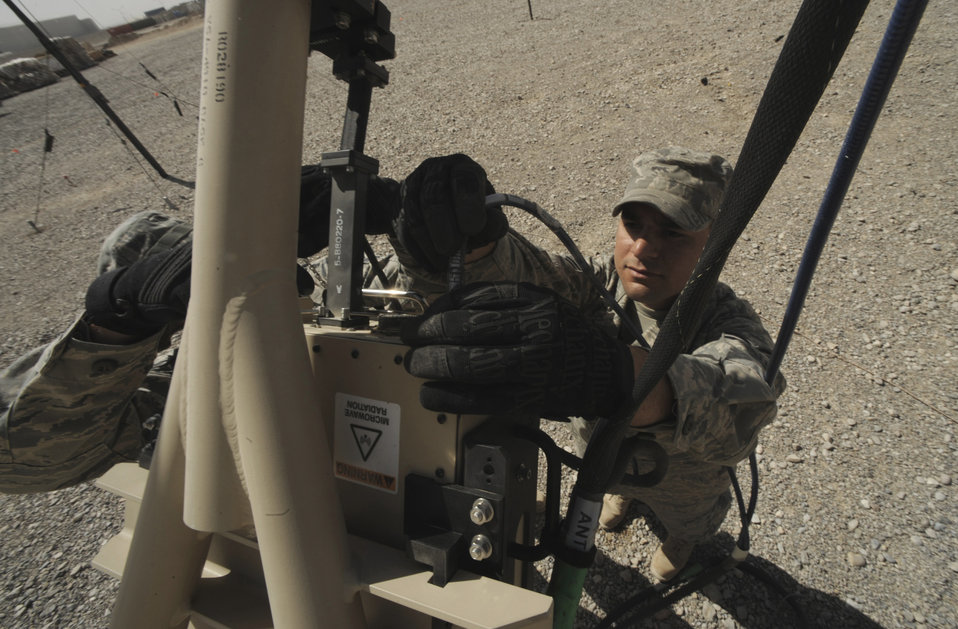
Operation Enduring Freedom

Senior Airman Sergio Saenz performs routine maintenance May 17 on a satellite dish at Kandahar Airfield, Afghanistan. Combat communications Airmen are responsible setting up and maintaining base telephone and internet communications. Airman Saenz is an RF transmissions engineer and satellite communications technician with the 451st Combat Communications Squadron at Kandahar.